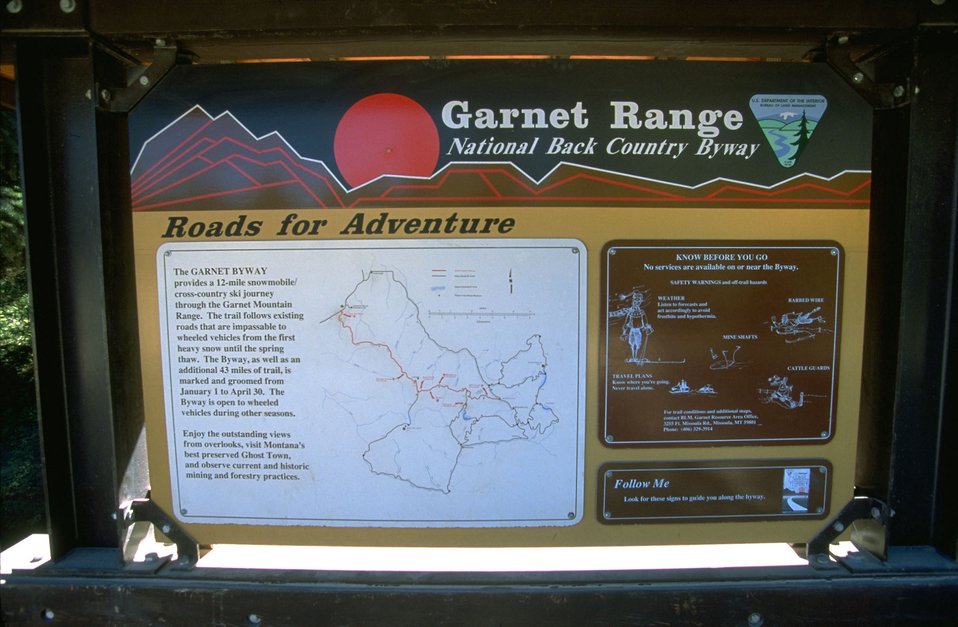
Garnet Back County Byway kiosk